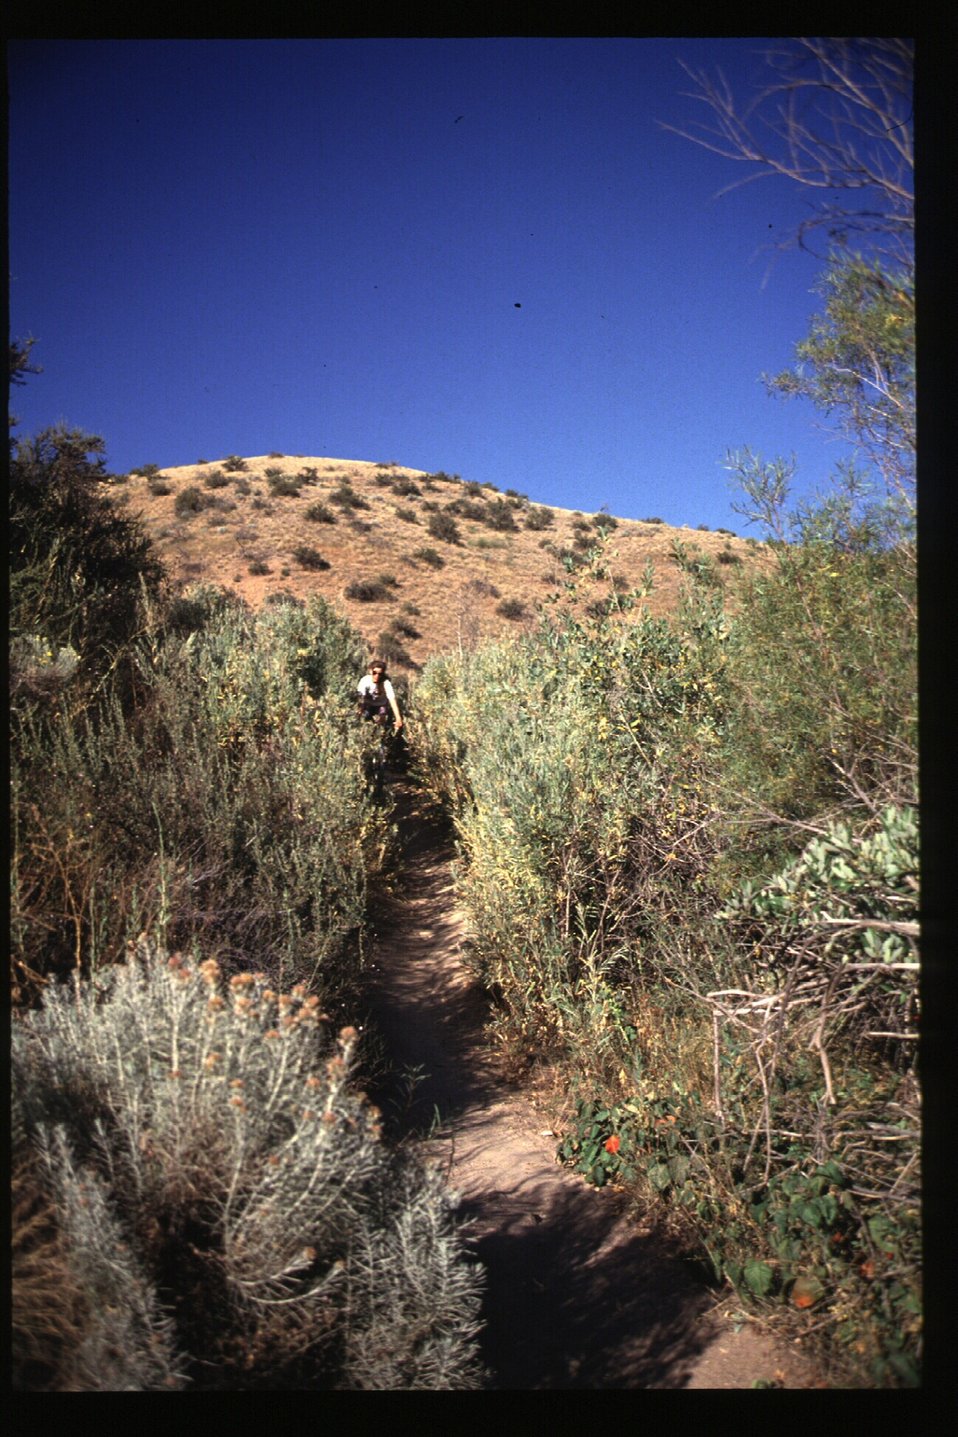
Biker in Boise Foothills Boise Front Four Rivers Field Office LSRD Lower Snake River District